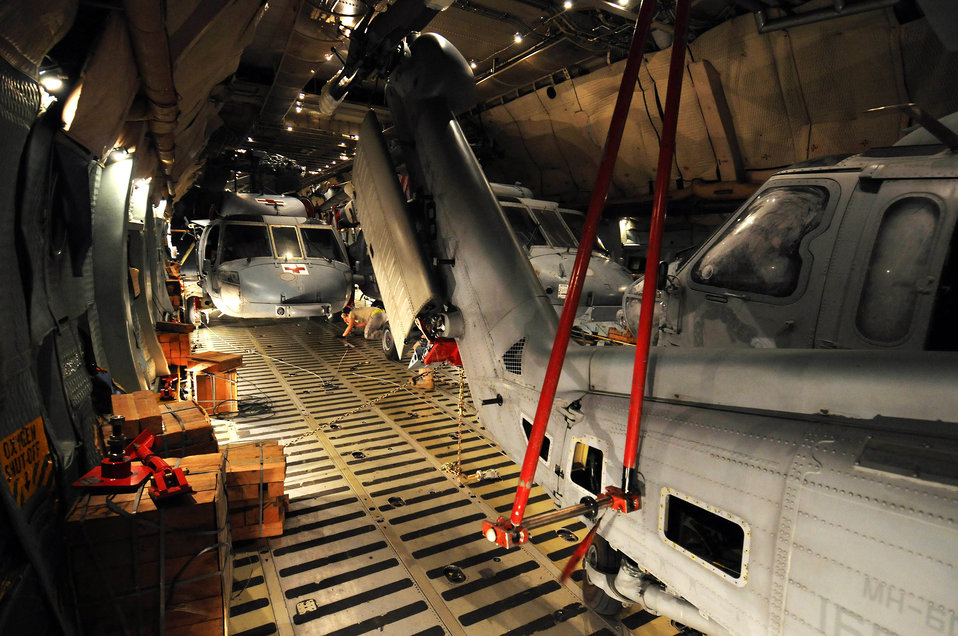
Just the right fit

Airmen from the West Virginia Air National Guard's 167th Airlift Wing and the 734th Air Mobility Squadron at Anderson Air Force Base, Guam, along with Sailors from Helicopter Sea Combat Squadron TWO-FIVE at Guam's A.B. Won Pat International Airport load three MH-60S Knighthawks and two SH-60H Sea Hawks onto a C-5 Galaxy March 13 at Andersen AFB. The helicopters were being transported to Naval Air Station North Island in San Diego.